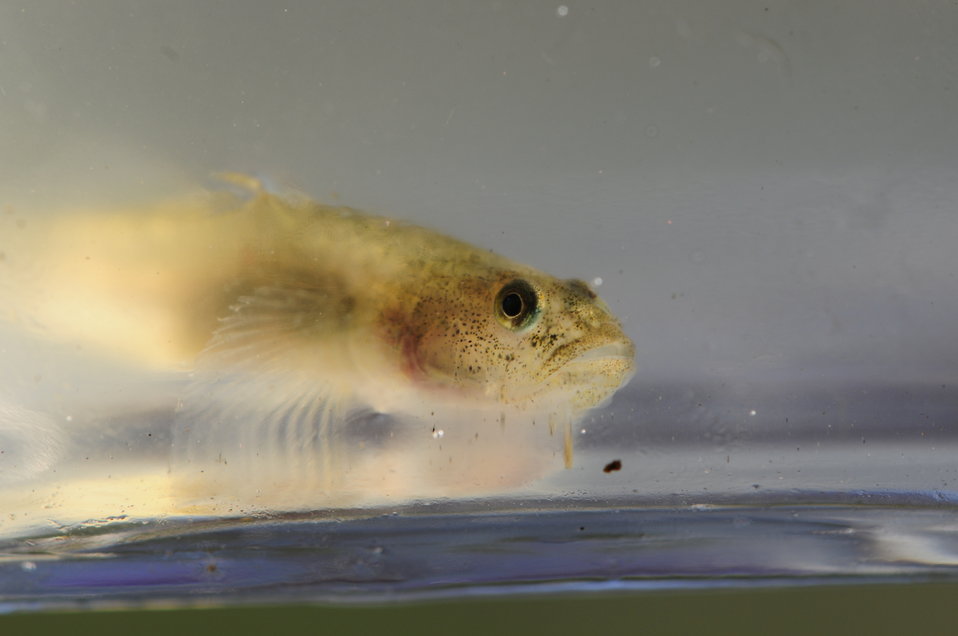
Tidewater goby